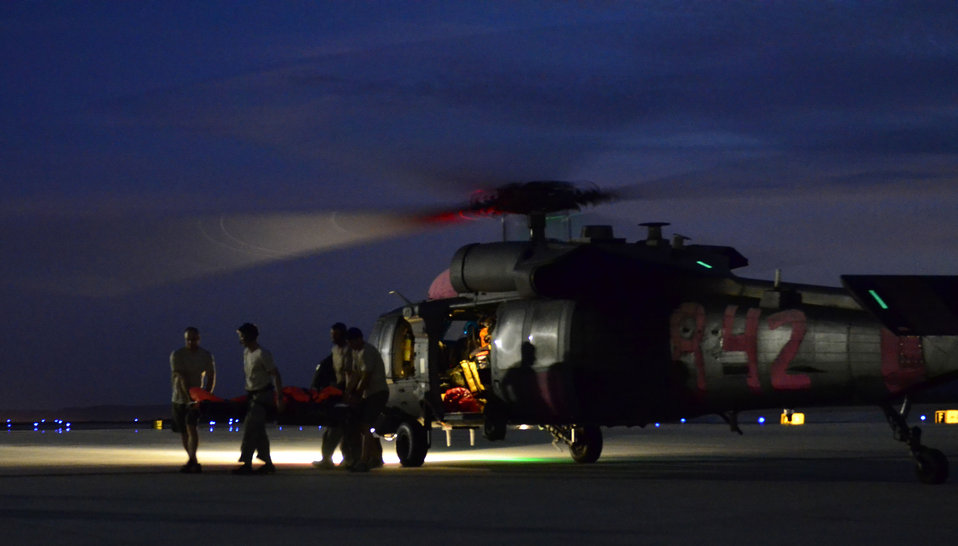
ANG Rescue

Members of the 129th Rescue Wing California Air National Guard assist in the rescue operations of two injured fisherman who were approximately 1400 miles off the coast of Acapulco, Mexico on Sept. 5, 2012.